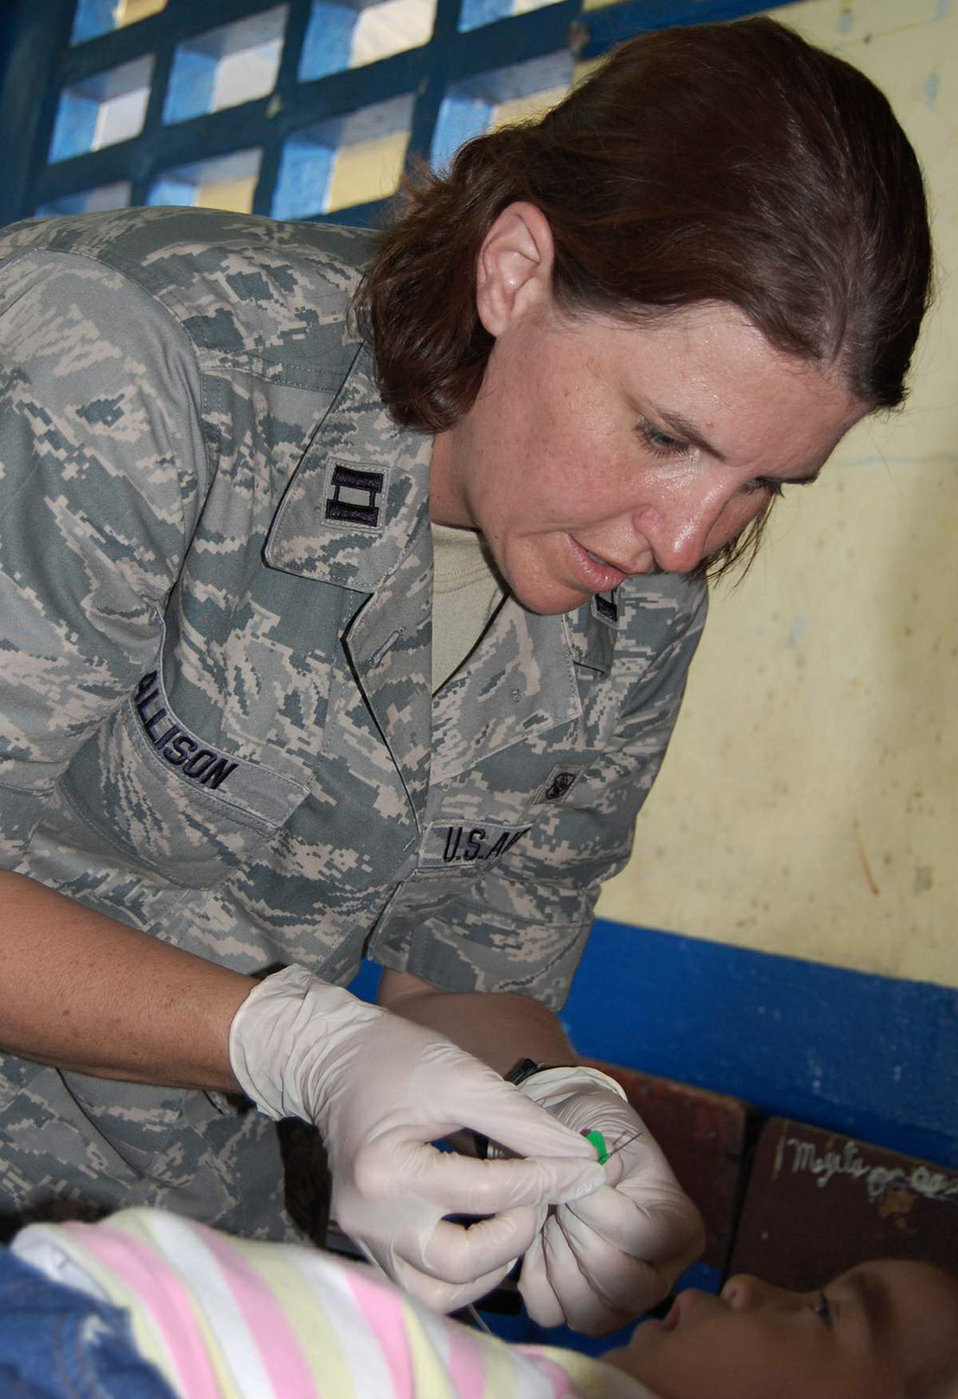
Continuing Promise 2009

Capt. Terese Allison provides medical care to a Panamanian child in Colon, Panama, during Continuing Promise 2009. She is from the 59th Medical Group at Lackland Air Force Base, Texas. The USNS Comfort is currently supporting Continuing Promise 2009 with a four month humanitarian mission to seven countries in Latin America and the Caribbean